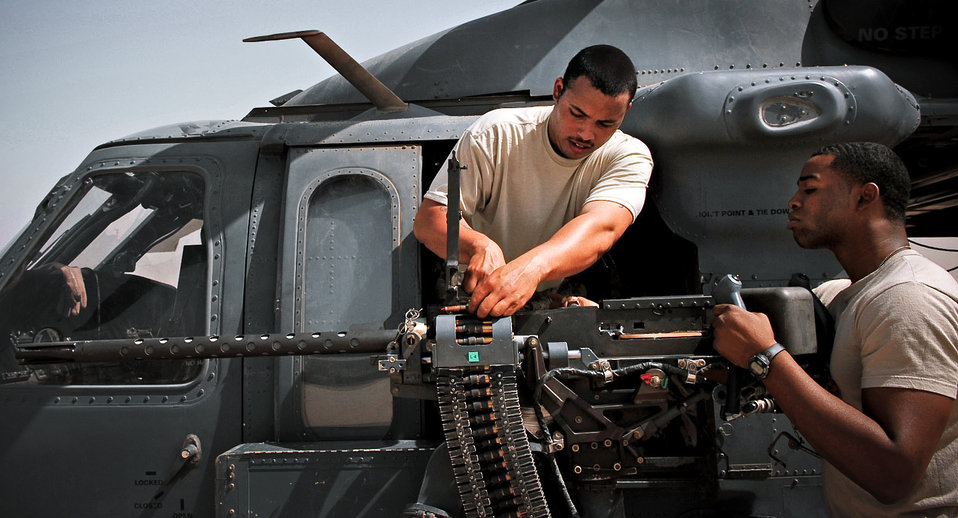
One Mississippi, two Mississippi

Senior Airmen Derand Javier (left) and Chris Moore test the head spacing of a .50-caliber machine gun on an HH-60G Pave Hawk helicopter at Balad Air Base, Iraq. Both Airmen are 64th Aircraft Maintenance Unit weapons specialists.